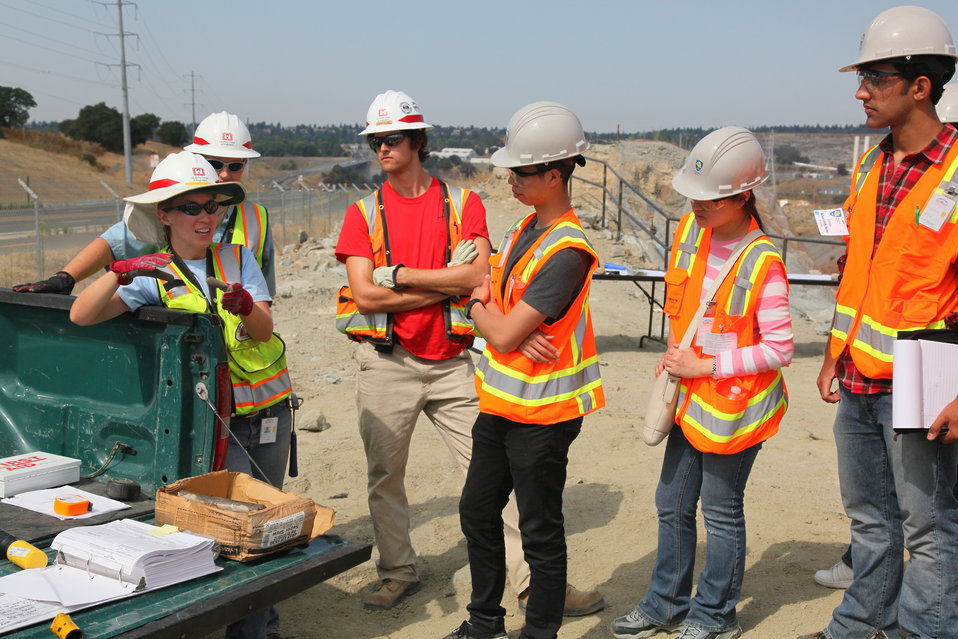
Construction and engineering students visit the Folsom spillway job site

Geologist Coralie Wilhite (left), with the U. S. Army Corps of Engineers Sacramento District, explains the rock drilling for blasting to visiting college students at the Folsom Dam spillway construction site in Folsom, Calif., Sept. 10. Whilhite and other Corps engineers were at Folsom Dam as part of the American Society of Civil Engineers Construction Institute’s “Student Days 2011” event. The event aims at providing college students from northern California the opportunity to network with industry, receive guided tours of construction sites, and briefings on the workings of engineering and construction efforts that go into a successful project.